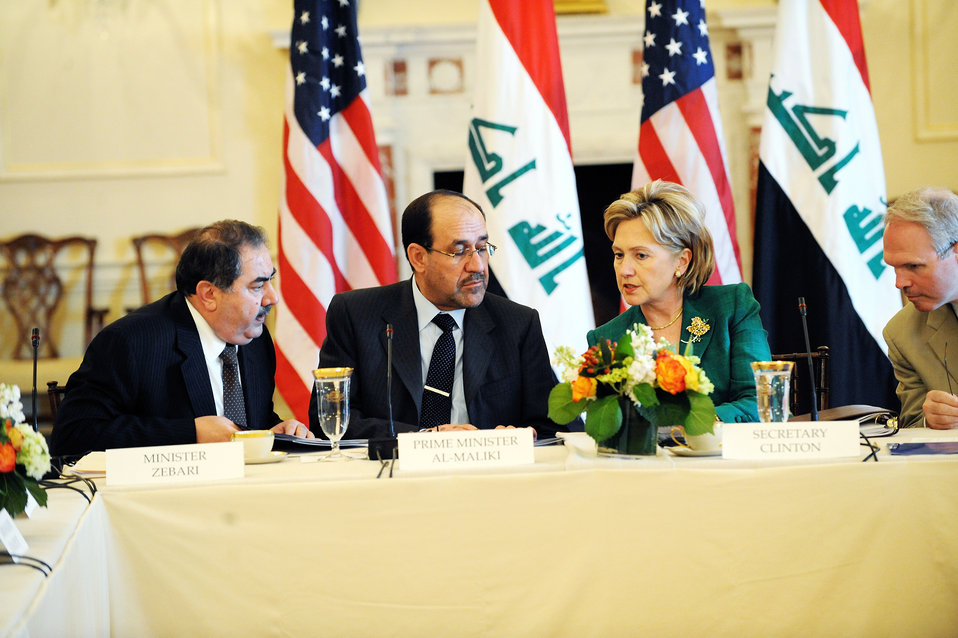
U.S.-Iraq High Coordinating Committee Meeting

U.S. Secretary of State Hillary Rodham Clinton holds U.S.-Iraq High Coordinating Committee Meeting with His Excellency Nouri al-Maliki, Prime Minister of the Republic of Iraqat the U.S. Department of State in Washington, DC July 24, 2009.